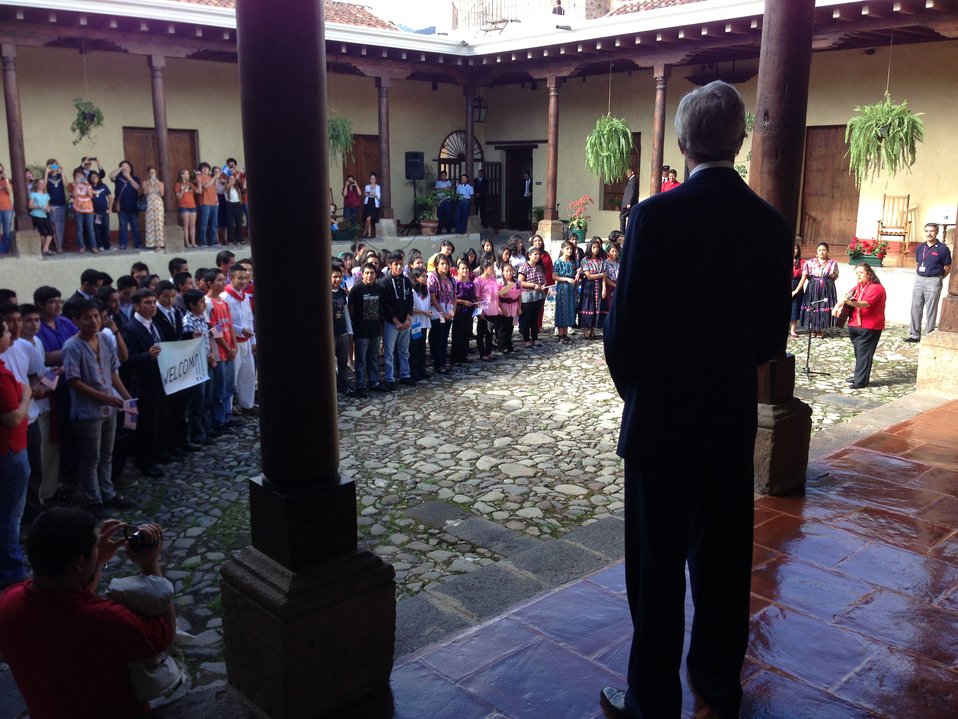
Secretary Kerry Listens as Guatemalan Children Sing

U.S. Secretary of State John Kerry listens as students in a State Department educational program focused on impoverished and indigenous children serenade him with a rendition of 'Sweet Caroline' during a visit to their school in Antigua, Guatemala, on June 5, 2013.